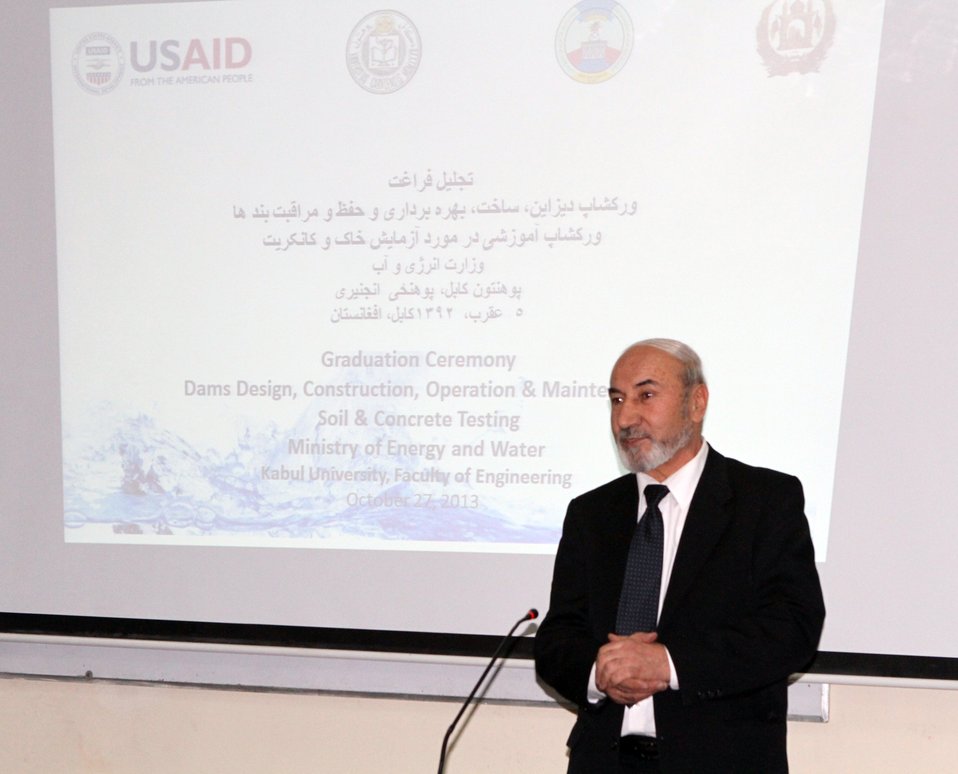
Professor Hamid Layan, Dean of the Faculty of Engineering welcomes participants of a short-term hydraulic engineering course sponsored by USAID.